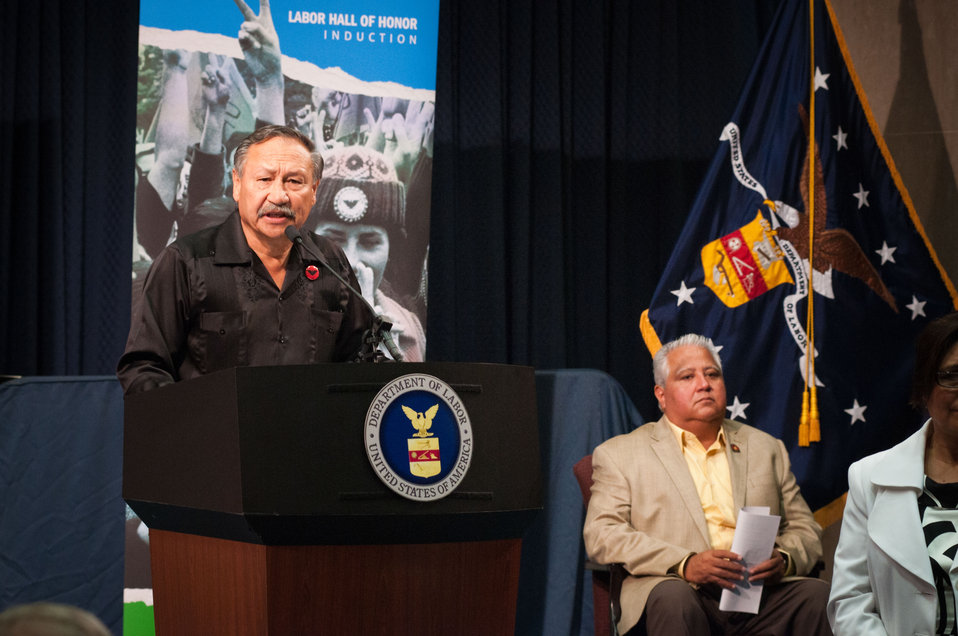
Arturo Rodriguez, President, United Farm Workers of America spoke of the diligence, dedication and effort by Cesar Chavez, a Mexican-American labor leader who used non-violent methods to fight for the rights of migrant farm workers in the southwestern United States during the dedication of the Cesar E. Chavez Memorial Auditorium at the United States Department of Labor in Washington, D.C., Monday, March 26, 2012. Behind Rodriguez is Paul Chavez, Cesar Chavez’s son. Chavez founded the Cesar Chavez Foundation, a group that advocates for the rights of farm workers, acting to increase wages and improve the working conditions and safety of farm workers.